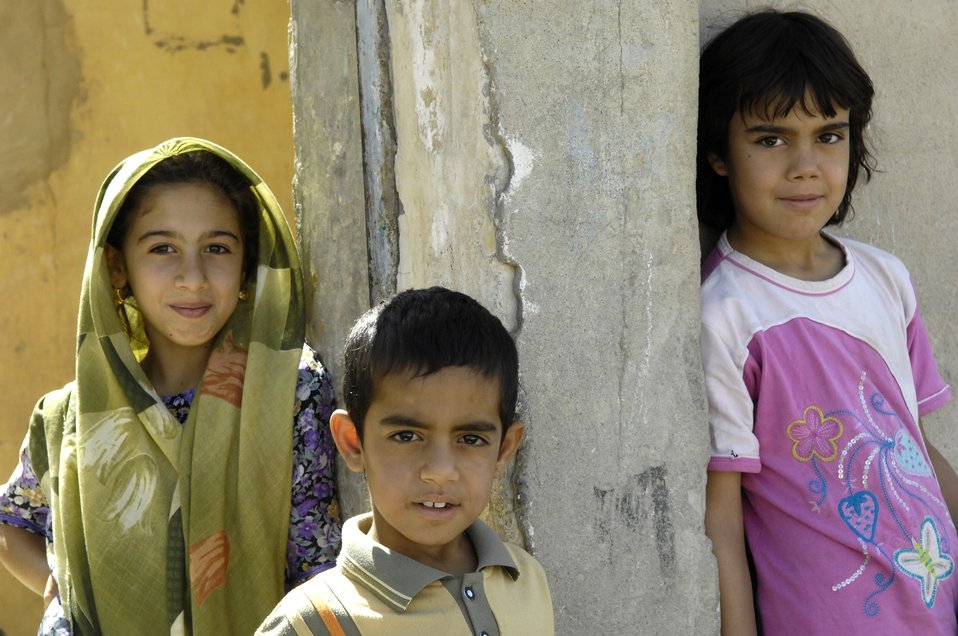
Checking things out

Iraqi children in a small village near the city of Lutafiyah, Iraq, watch as coalition forces conduct a search. Children come out of their homes during these times to satisfy their curiosity. Lutafiyah located in the southern sector of Baghdad.